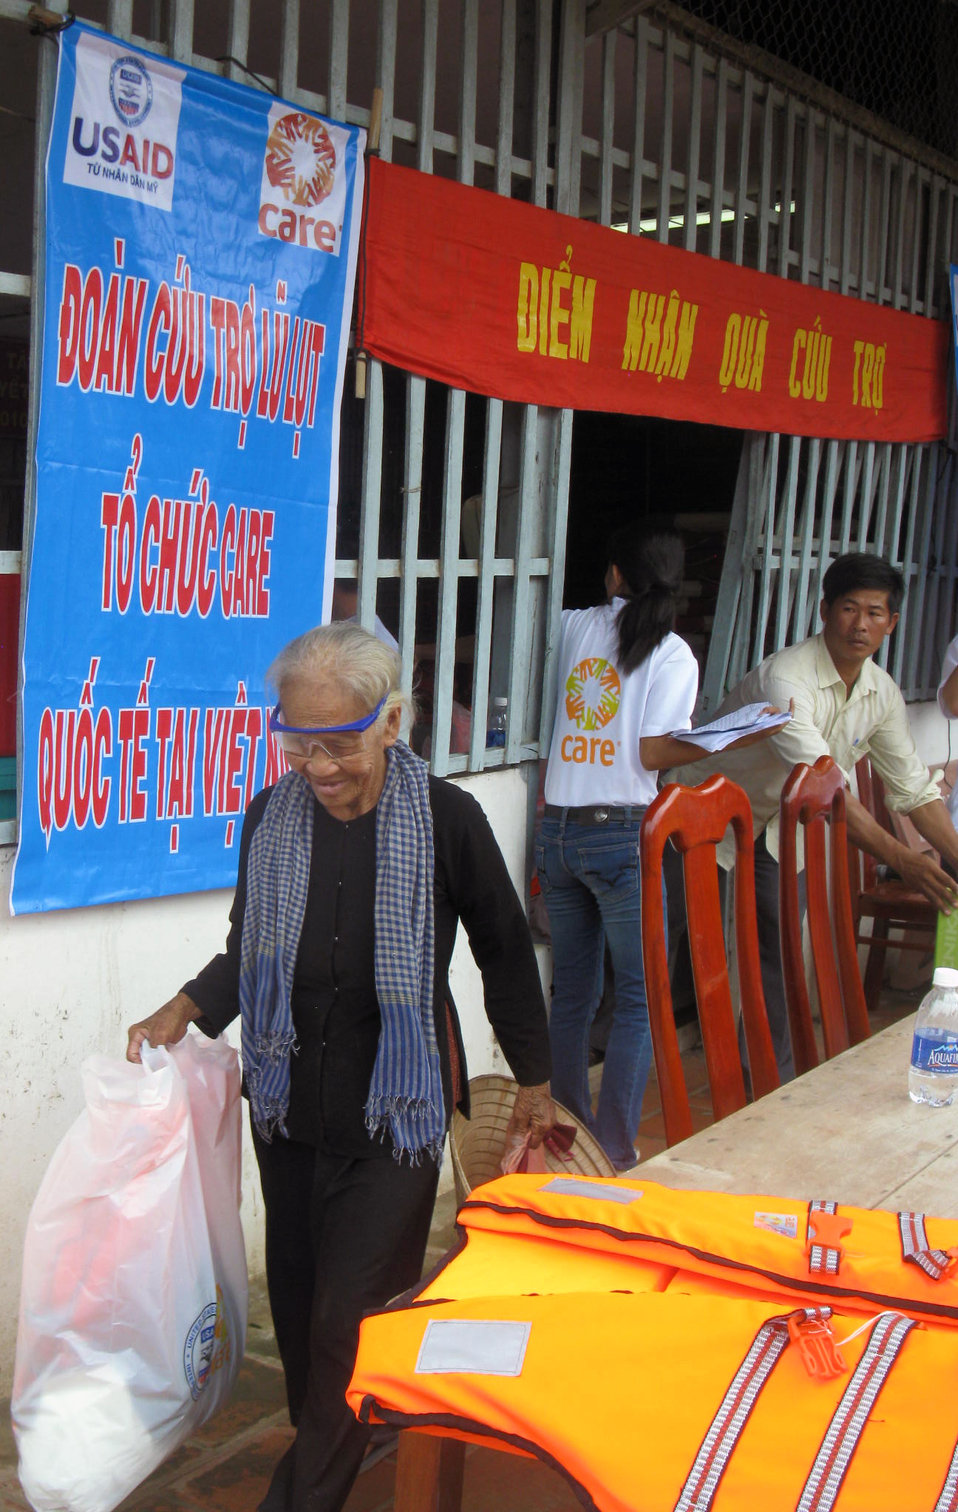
Flood Victim Receives Supplies

USAID and CARE deliver emergency supplies in Vietnam's An Giang Province, November 2011.